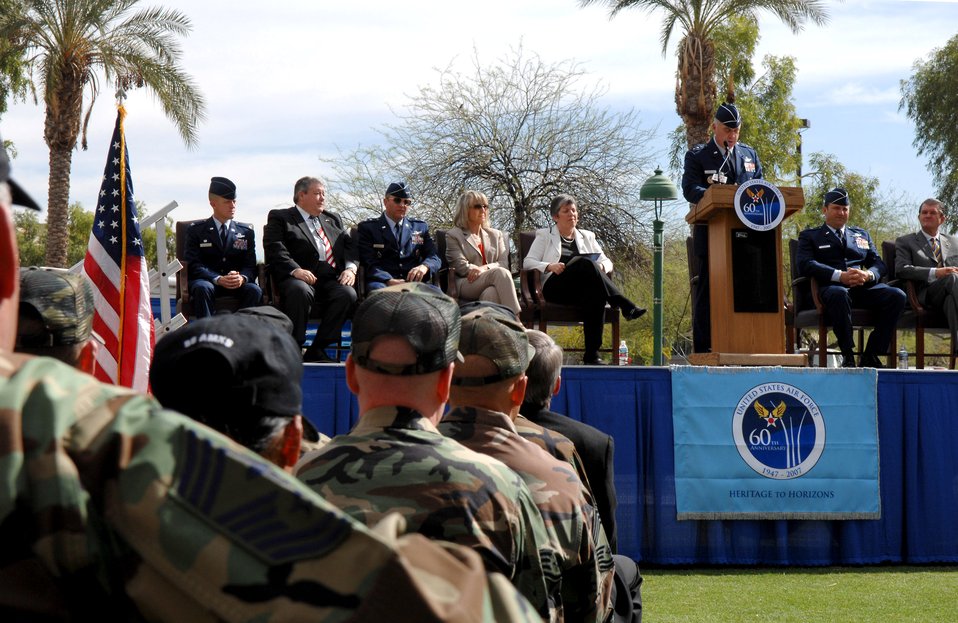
Air Force Week kicks off in Phoenix

Lt. Gen. Carrol H. Chandler gives a speech on the lawn of the state capital in Phoenix after Arizona Governor Janet Napolitano declared the week of March 19-25 Air Force Week during a proclamation ceremony. Several bus loads of Airmen from nearby Luke Air Force Base joined Arizona state officials and Air Force senior leaders at the state's capital to kick off this year's first Air Force Week event.